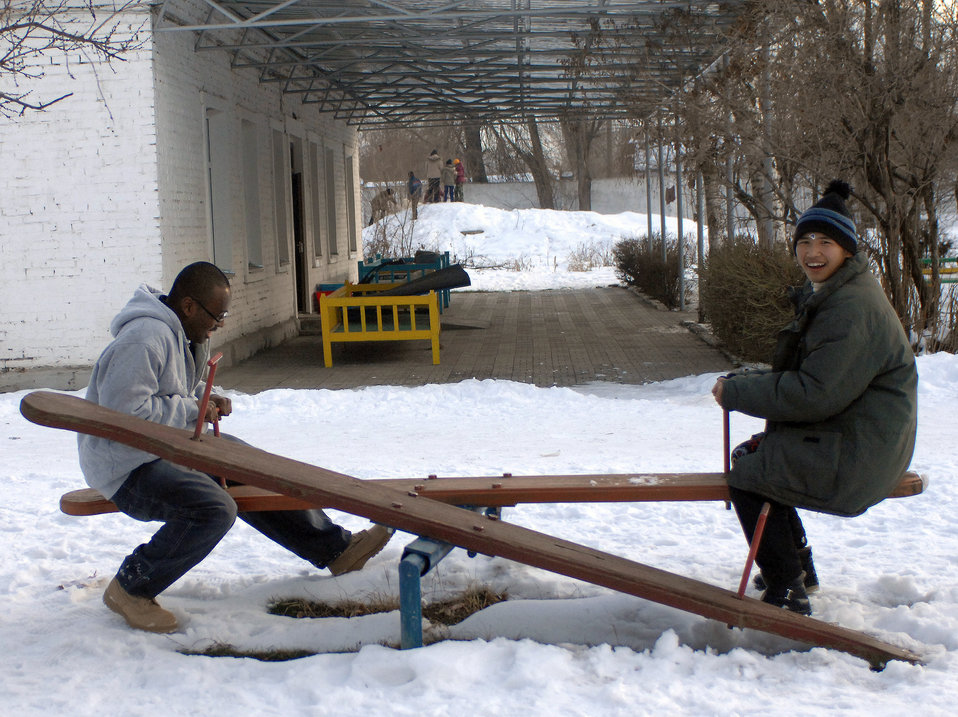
Manas Airmen make memorable bonds with Kyrgyz children

Airman Amir Mustafa plays on a teeter totter with a young boy Jan. 11 at the Belovodosky orphanage north of Bishkek, Kyrgyzstan. Airmen from nearby Manas Air Base visit the orphanage frequently to share friendship and donate toys as well as clothing, blankets, diapers and toiletries. Sergeant Mustafa is deployed with the 376th Expeditionary Logistics Readiness Squadron.